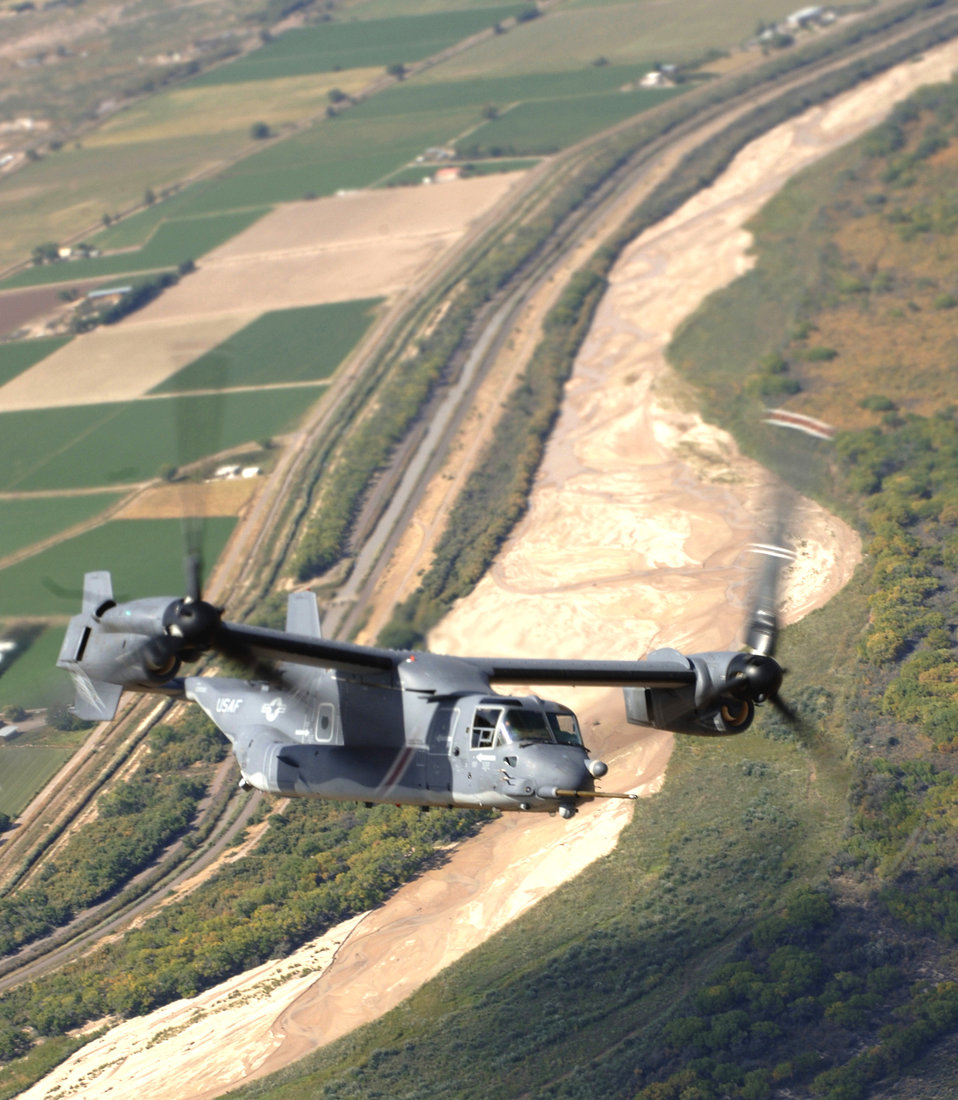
Pilots thrilled by CV-22 capabilities

A CV-22 Osprey flies an air-refueling mission Oct. 5 over New Mexico. The CV-22 can take off vertically and, once airborne, rotate the nacelles on each wing -- engine and prop-rotor group -- to a forward position.